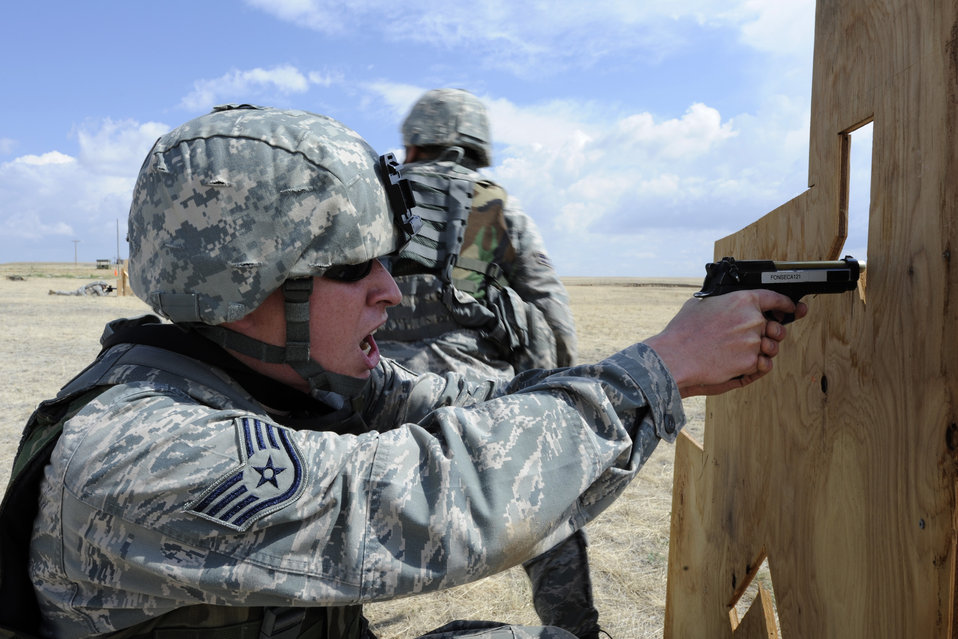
Schriever SFS training

Staff Sgt. Richard Nash provides cover while running the Shoot, Move and Communicate course June 15, 2011, at Schriever Air Force Base, Colo. The security forces specialists train on this course to maintain proficiency in tactical maneuvers.Sergeant Nash is a member of the 50th Security Forces Squadron.